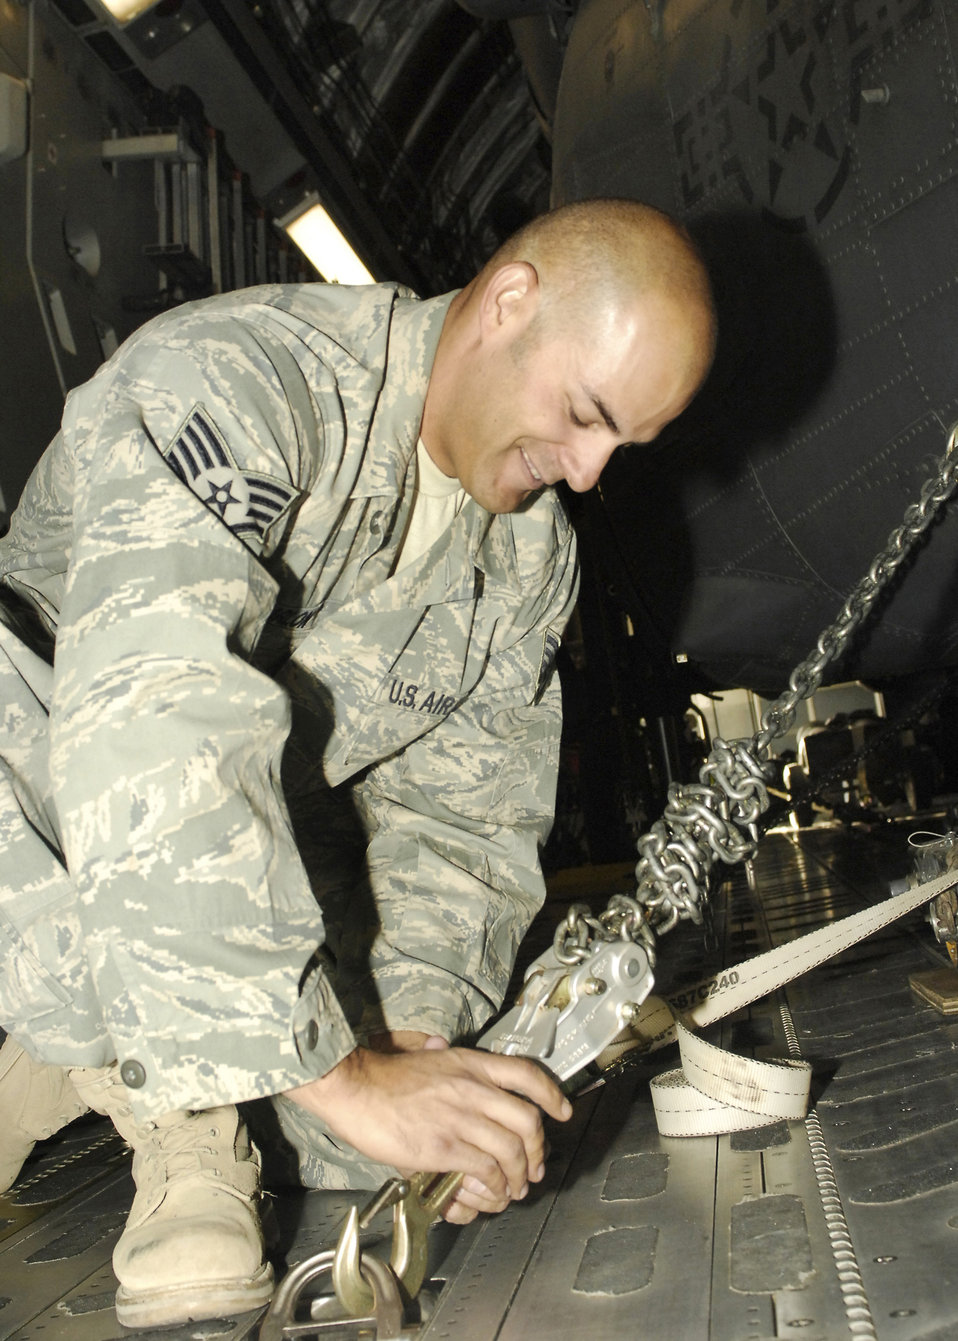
Flying a hawk home

Staff Sgt. Elias Carlon uses heavy duty harnesses to ensure a HH-60G Pave Hawk doesn't get damaged in transit aboard a C-17 Globemaster III Sept. 9, 2009, at Bagram Airfield, Afghanistan. Sergeant Carlon is an electronic warfare technician from the 455th Expeditionary Aircraft Maintenance Squadron, and is deployed from Royal Air Force Lakenheath, England.